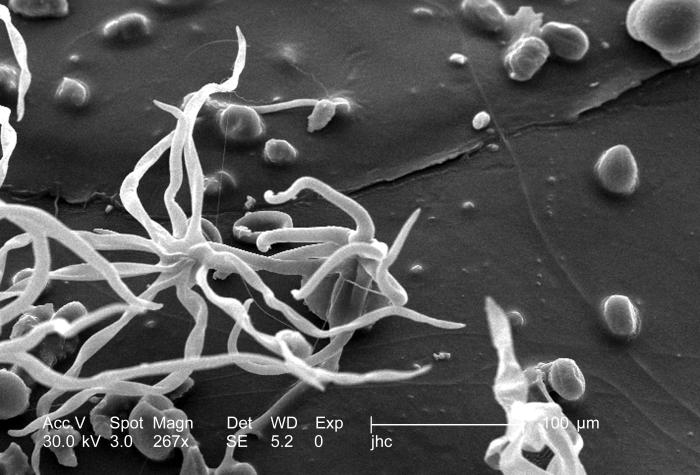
Magnified 267x, this scanning electron micrograph (SEM) revealed the presence of a coating of debris adhered to the ventral surface of an unidentified lizard's head region, which had been found deceased on the grounds of the Decatur, Georgia suburbs. Note the myriad of what proved to be unidentified pollen grains, and unknown parasitic mites. For the full complement of images related to this specimen see PHIL 8803 through 8816, which includes highly magnified views of a Nanorchestes sp. mite found coincidentally on this repitiles skin.